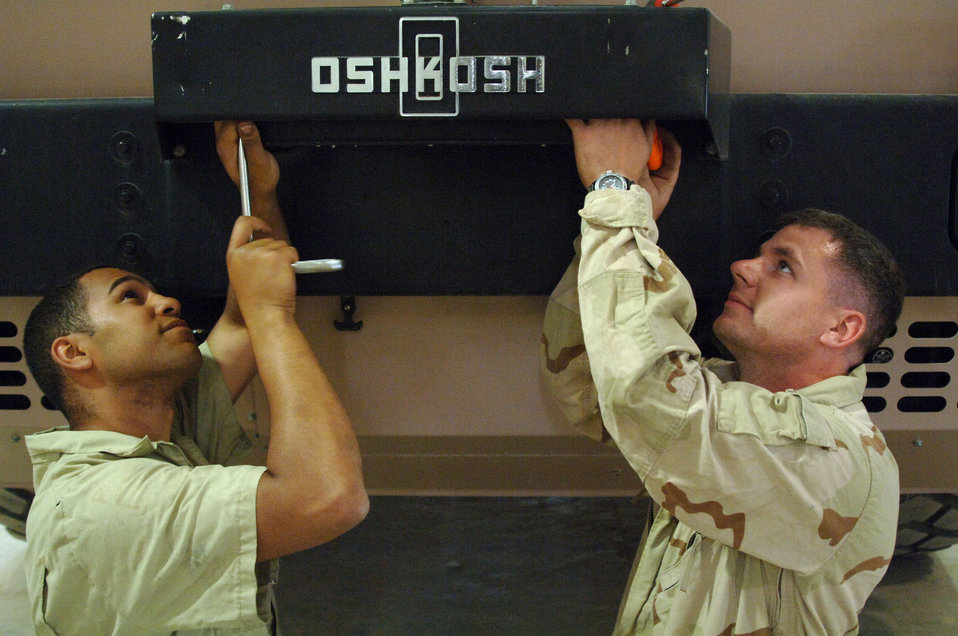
Vehicle maintainers keep Balad rollin'

Senior Airmen Joseph Baltes and Jeremy Camper adjust the pneumatic speed control on a crash response truck April 25 at Balad Air Base, Iraq. Both Airmen are special purpose vehicle mechanics with the 332nd Expeditionary Logistics Readiness Squadron. Airman Baltes is deployed from Charleston Air Force Base, S.C., and Airman Camper is from McGuire AFB, N.J.